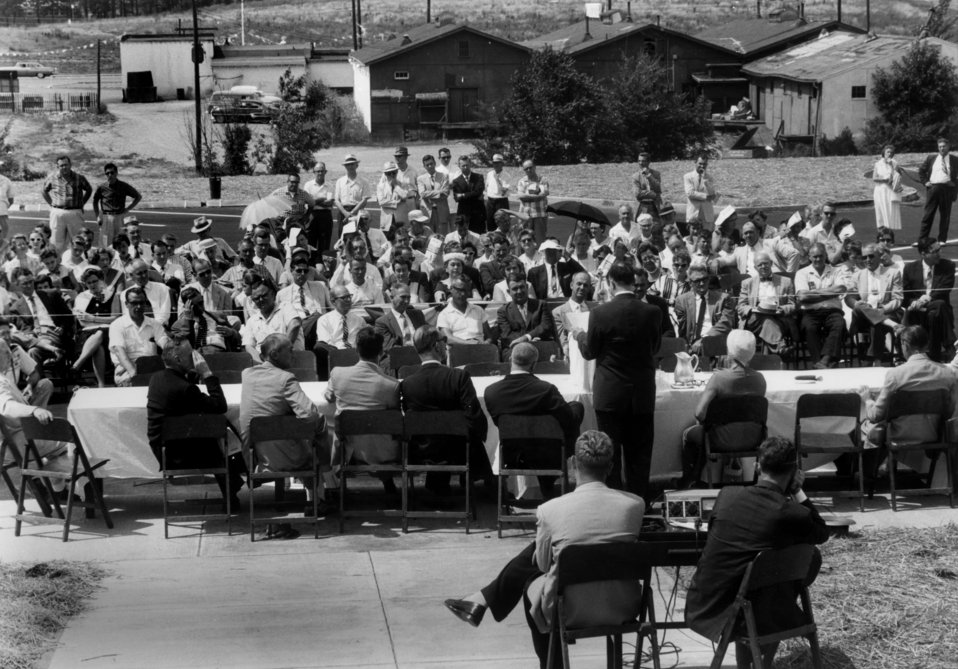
Municipal Bldg. ground breaking ceremony Oak Ridge

58-496-3 DOE photo by Ed Westcott

Municipal Bldg. ground breaking ceremony Oak Ridge Tennessee 6-19-1957